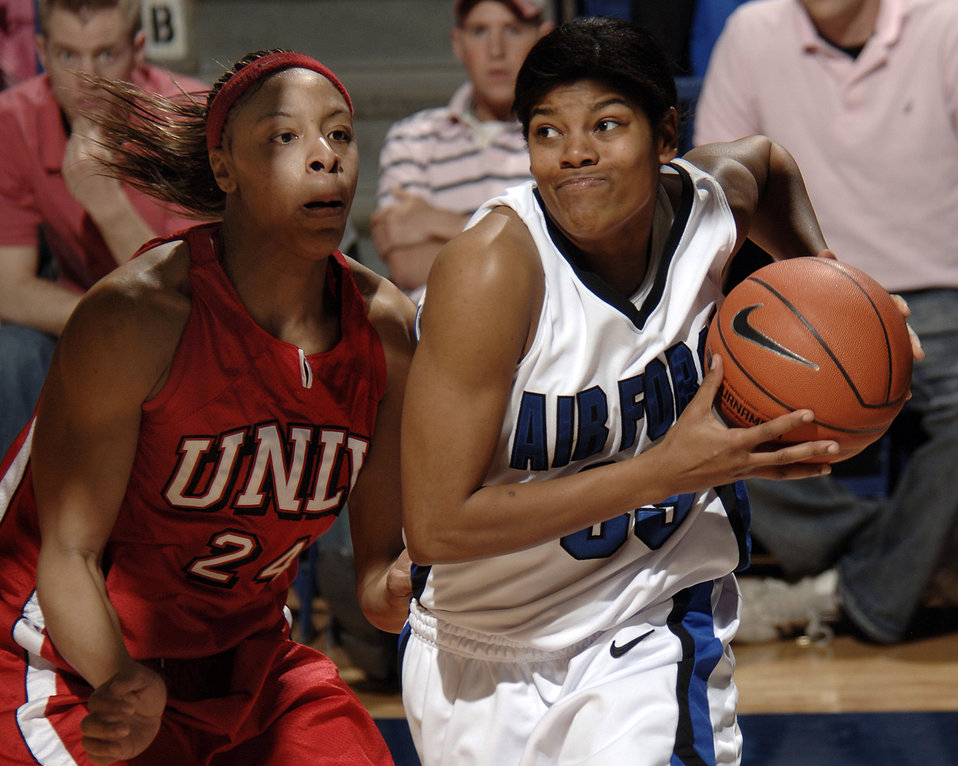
Going in for the score

Air Force Academy junior forward Dana Loveless moves the ball against a determined University of Nevada - Las Vegas Rebel defense during a hotly contested game Feb. 13. The Falcons defeated UNLV 71-66 and improved to 8-14 overall.